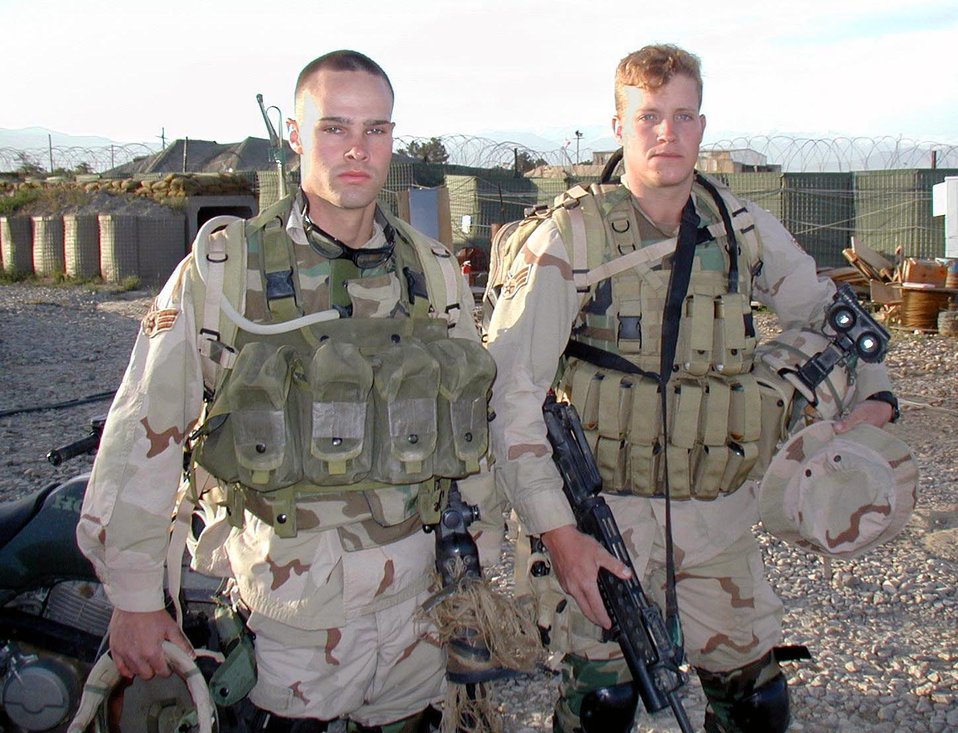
Countersnipers

OPERATION ENDURING FREEDOM -- Senior Airmen Luke Allen (left) and Rusty Youngblood, Air Force countersnipers deployed to Bagram Air Base, Afghanistan, got what they call